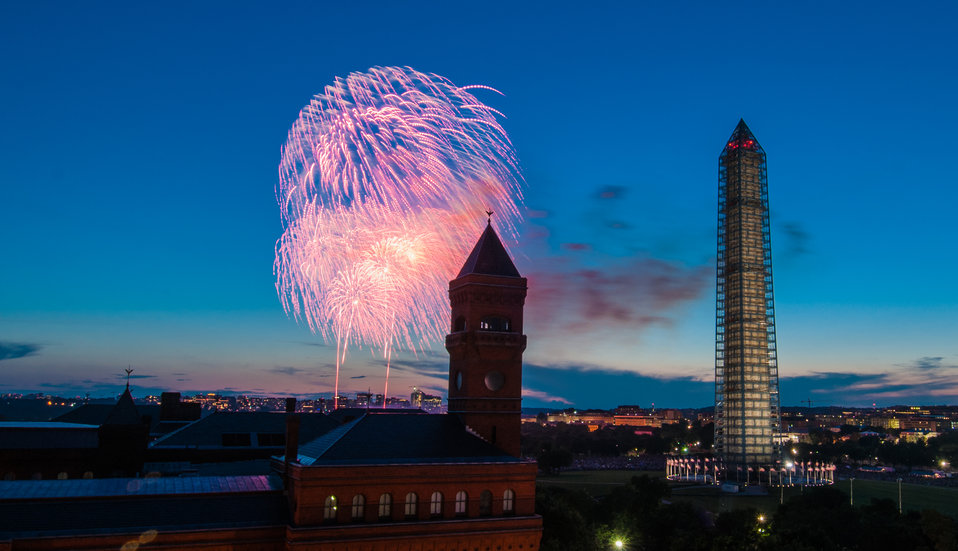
4th of July fireworks as seen from the U.S. Department of Agriculture (USDA) headquarters building, with the USDA Forest Service Yates Building in the foreground, left, and the Washington Monument in Washington, D.C., on July 4, 2013.